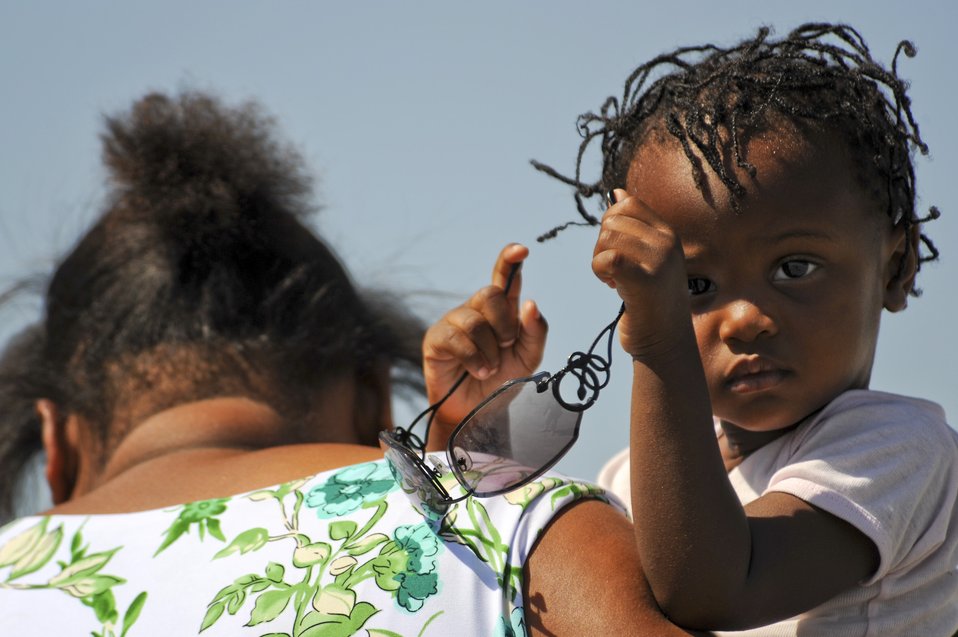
Evacuation

A little girl entertains herself while waiting to board a C-17 Globemaster III at Toussaint L'Ouverture International Airport in Port-au-Prince, Haiti, Jan. 23, 2010. Nearly 200 people boarded the aircraft to leave in the aftermath of the devastating earthquake that struck the country Jan. 12.